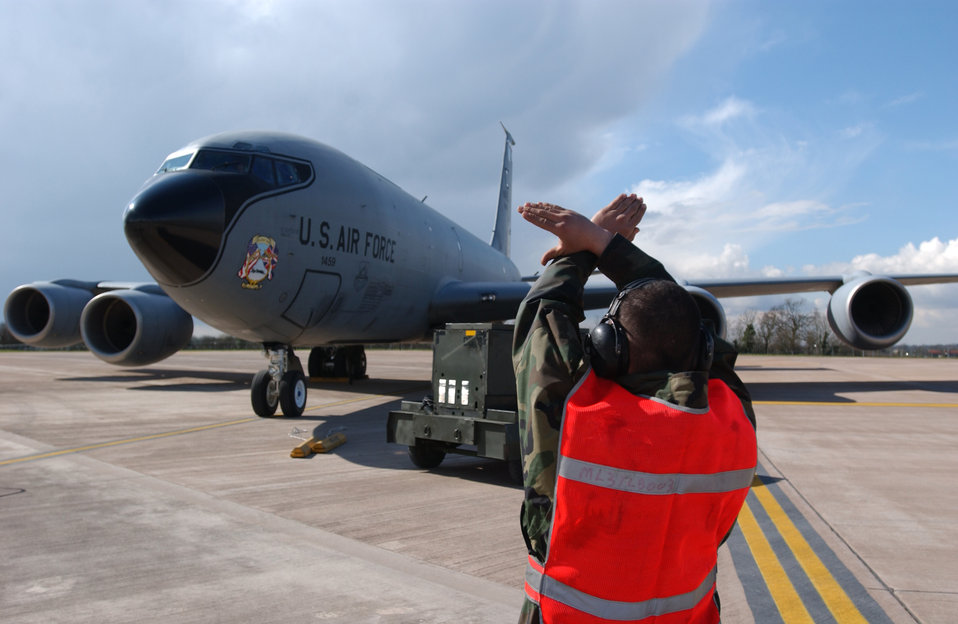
Bring it in

ROYAL AIR FORCE FAIRFORD, England -- Airman 1st Class Adnardo Garcia Jr. marshalls in a KC-135 Stratotanker on the flightline here March 24. Airman Garcia Jr. is a crew chief with the 100th Aircraft Maintaince Squadron at Royal Air Force Mildenhall, England.